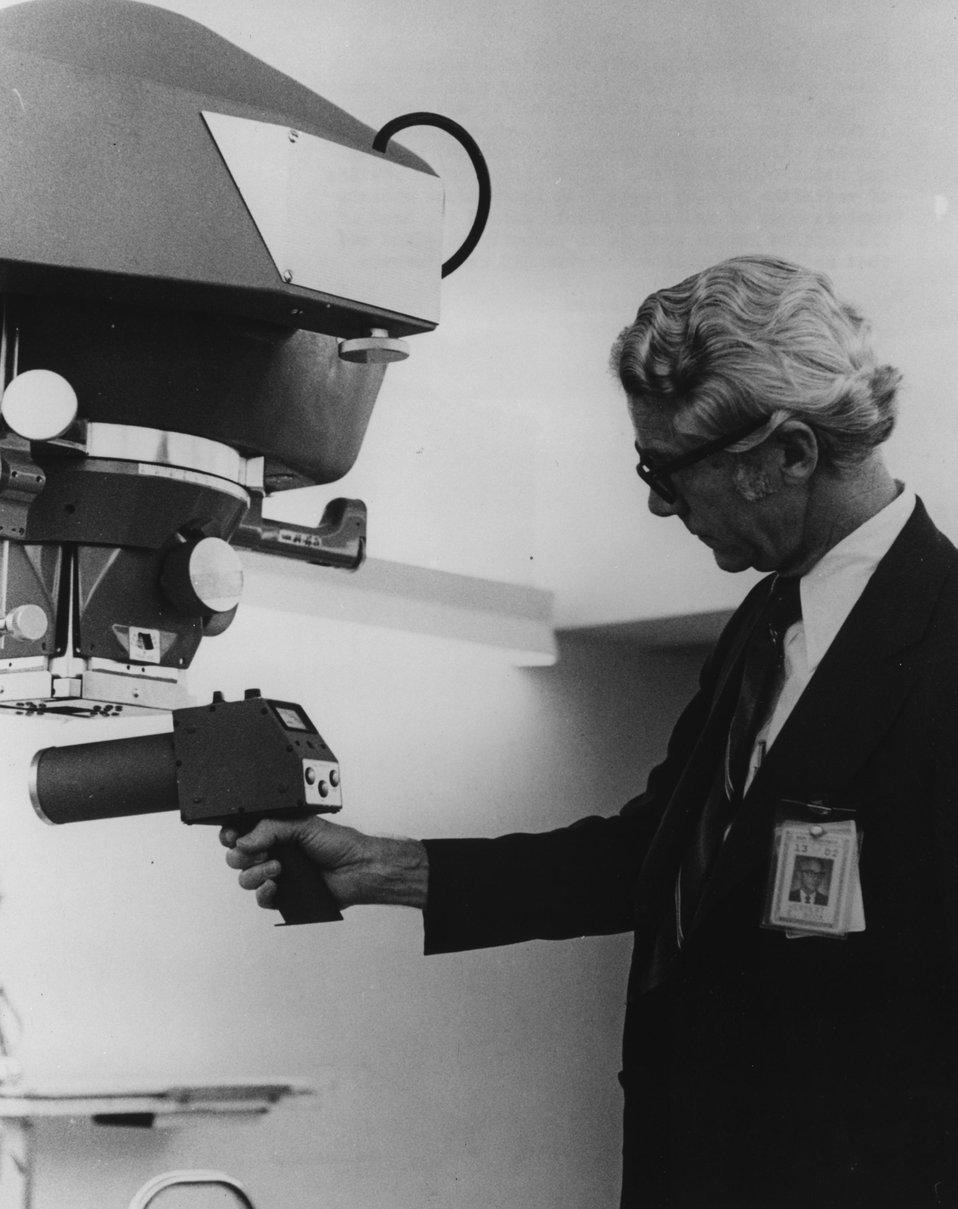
An AEC health and safety inspector is shown inspecting a medical cobalt-60 teletherapy treatment device at the Oakland (Calif.) Naval Hospital. Circa 1973.